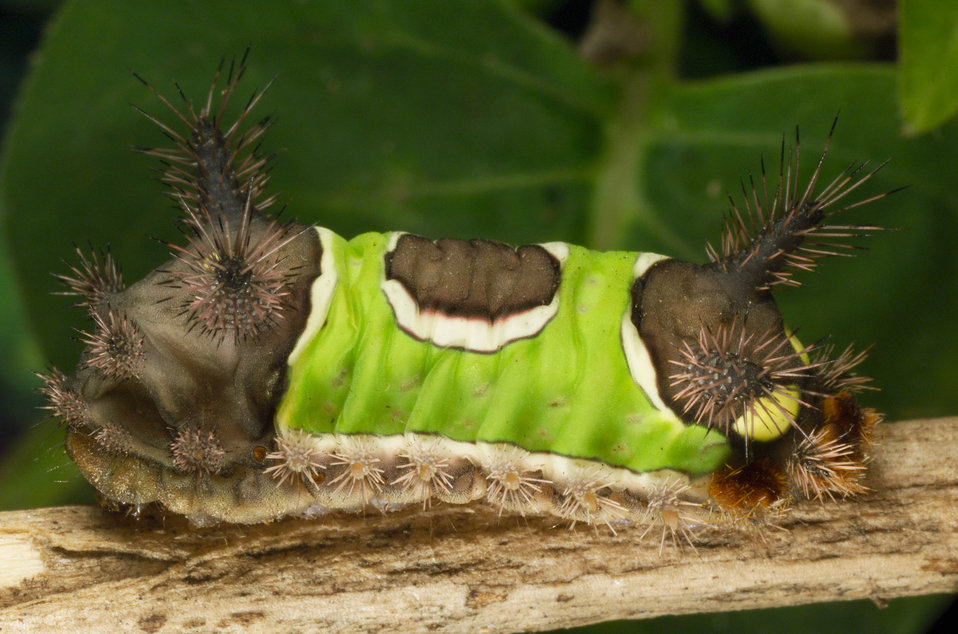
This 2001 photograph depicted a left lateral, or side view of a poisonous saddleback caterpillar, which is actually the 'instar', or developmental stage through which the saddleback caterpillar moth, Sibine stimulea passes on its way to becoming an adult, or 'imago', moth.